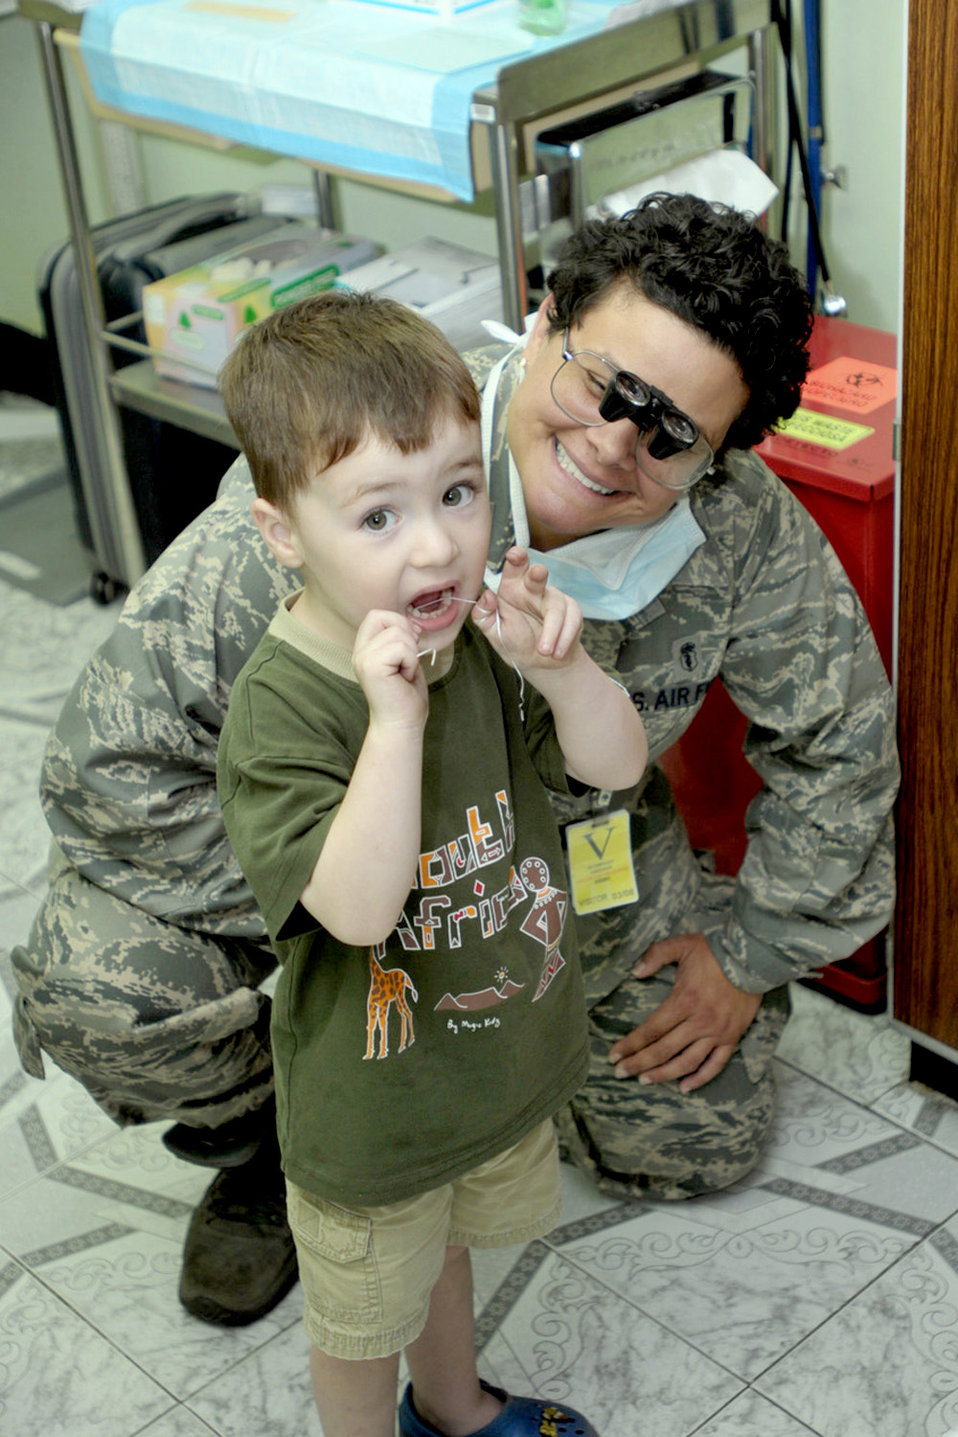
Air Force dentists bring relief to the Congo

The son of an embassy worker shows Lt. Col. (Dr.) Jacqueline Garcia-Castellanos that he knows how to floss his teeth Sept. 12, 2010, in Kinshasa, Democratic Republic of the Congo. Colonel Garcia-Castellanos, a reservist with the 482nd Aeromedical Dental Squadron, Homestead Air Reserve Base, Fla., is in the DRC as part of MEDFLAG 10, a joint training exercise with the U.S. and FARDC militaries focusing on humanitarian and civil assistance.